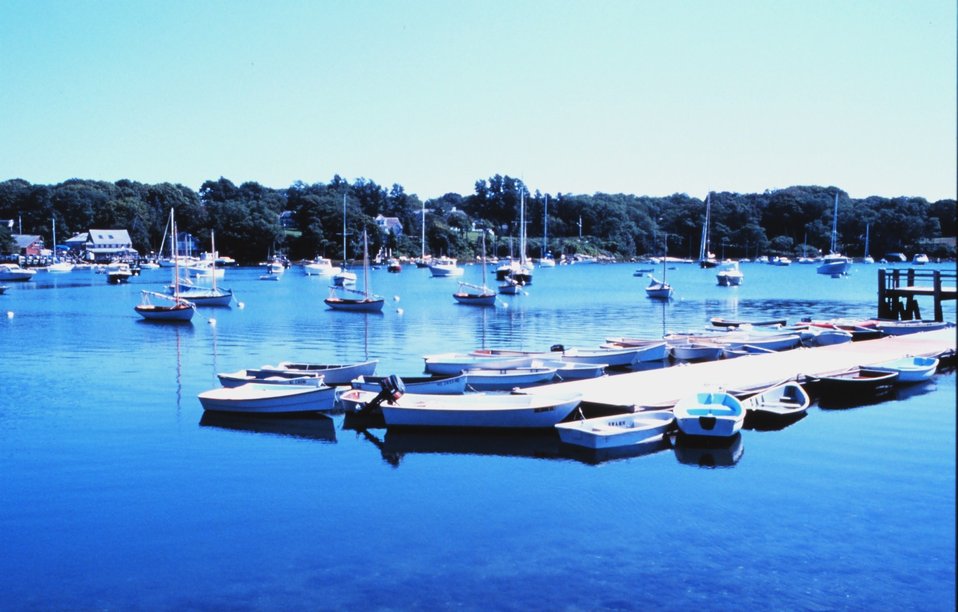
Quissett Harbor, Woods Hole, Falmouth